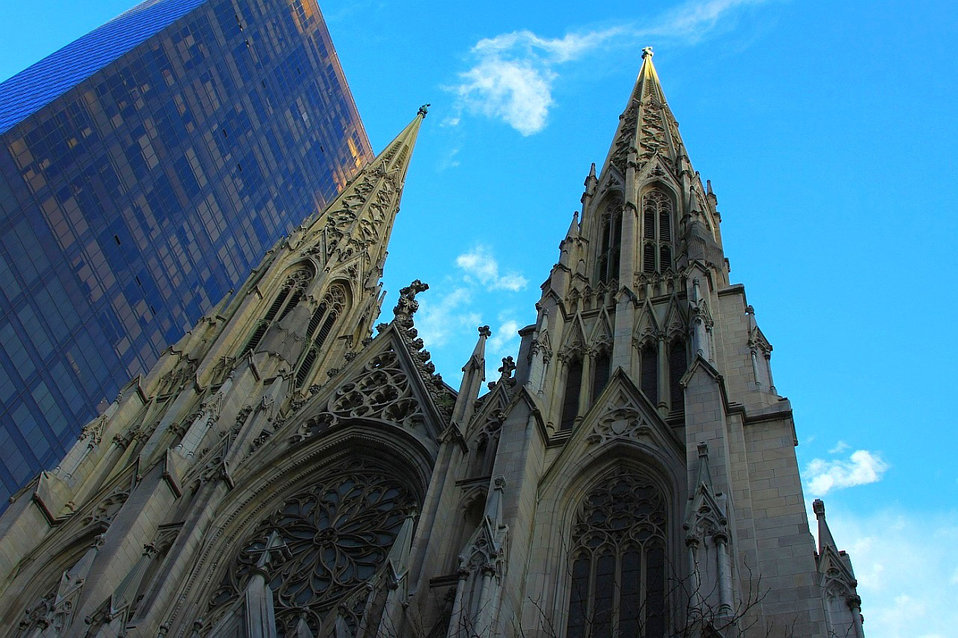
Towers

Ny saint patrick cathedral towers against modern skyscraper.